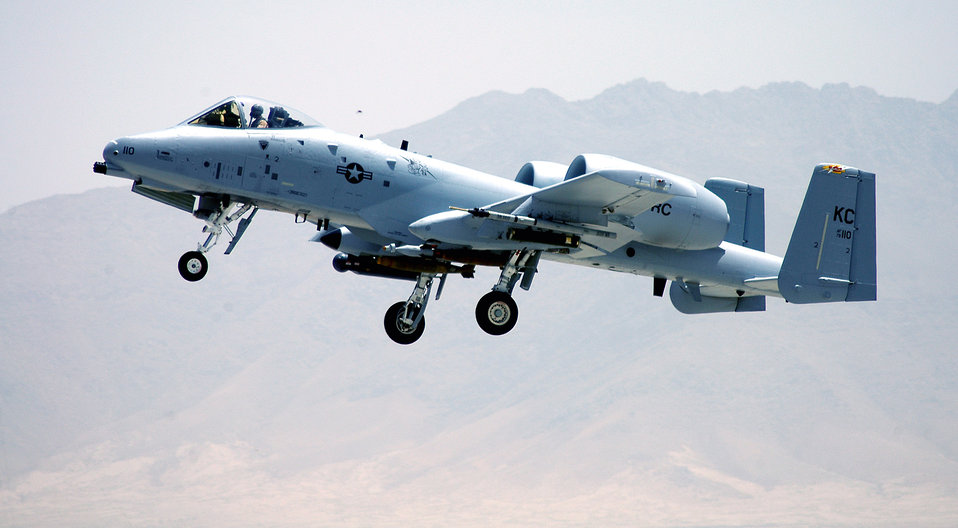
Hawgsmoke 2008

Twenty-five to 30 A-10 Thunderbolt IIs, like this one, will participate in Hawgsmoke 2008 in Salina, Kan., Oct. 15 to 18, despite an Air Force time-compliance technical order issued Oct. 3 to inspect for wing cracks on 130 of the service's almost 400 A-10 aircraft. Hawgsmoke is an Air Force A-10 bombing and gunnery competition held every two years.